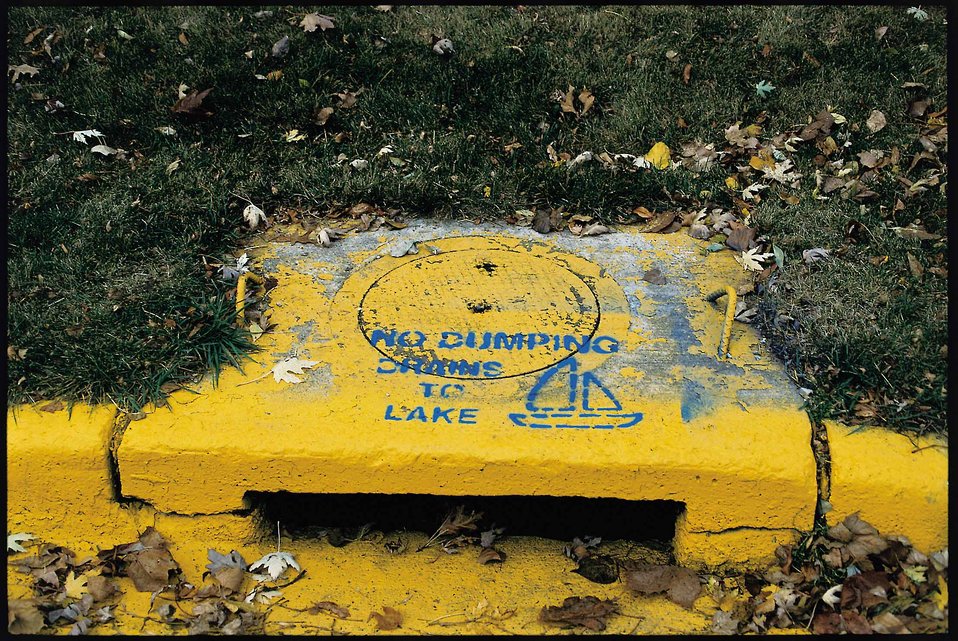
More and more, communities are labeling storm sewers to discourage people from dumping any materials that might pollute the water.